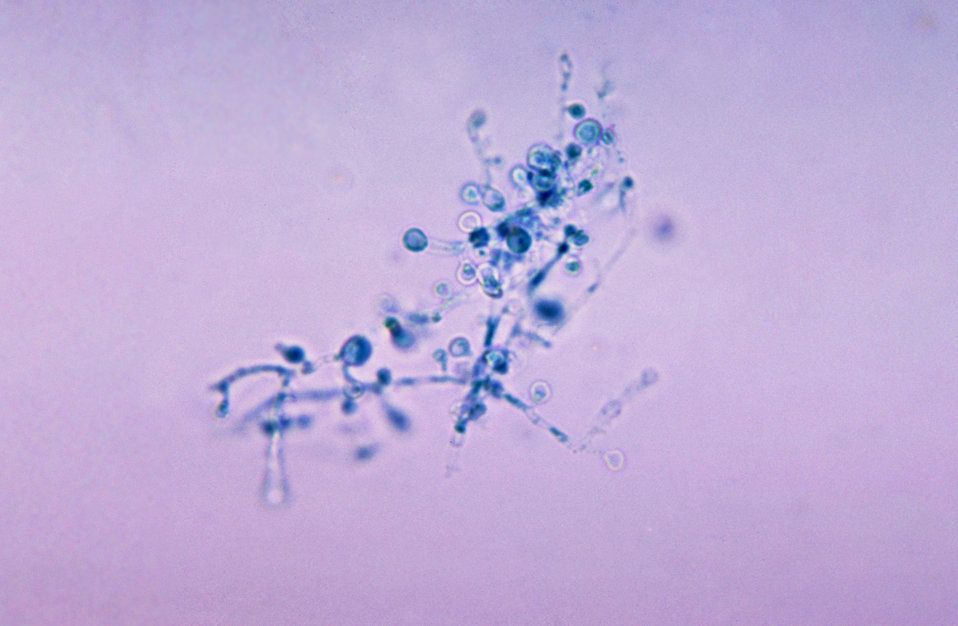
This is a photomicrograph of Blastomyces dermatitidis using a cotton blue staining technique.